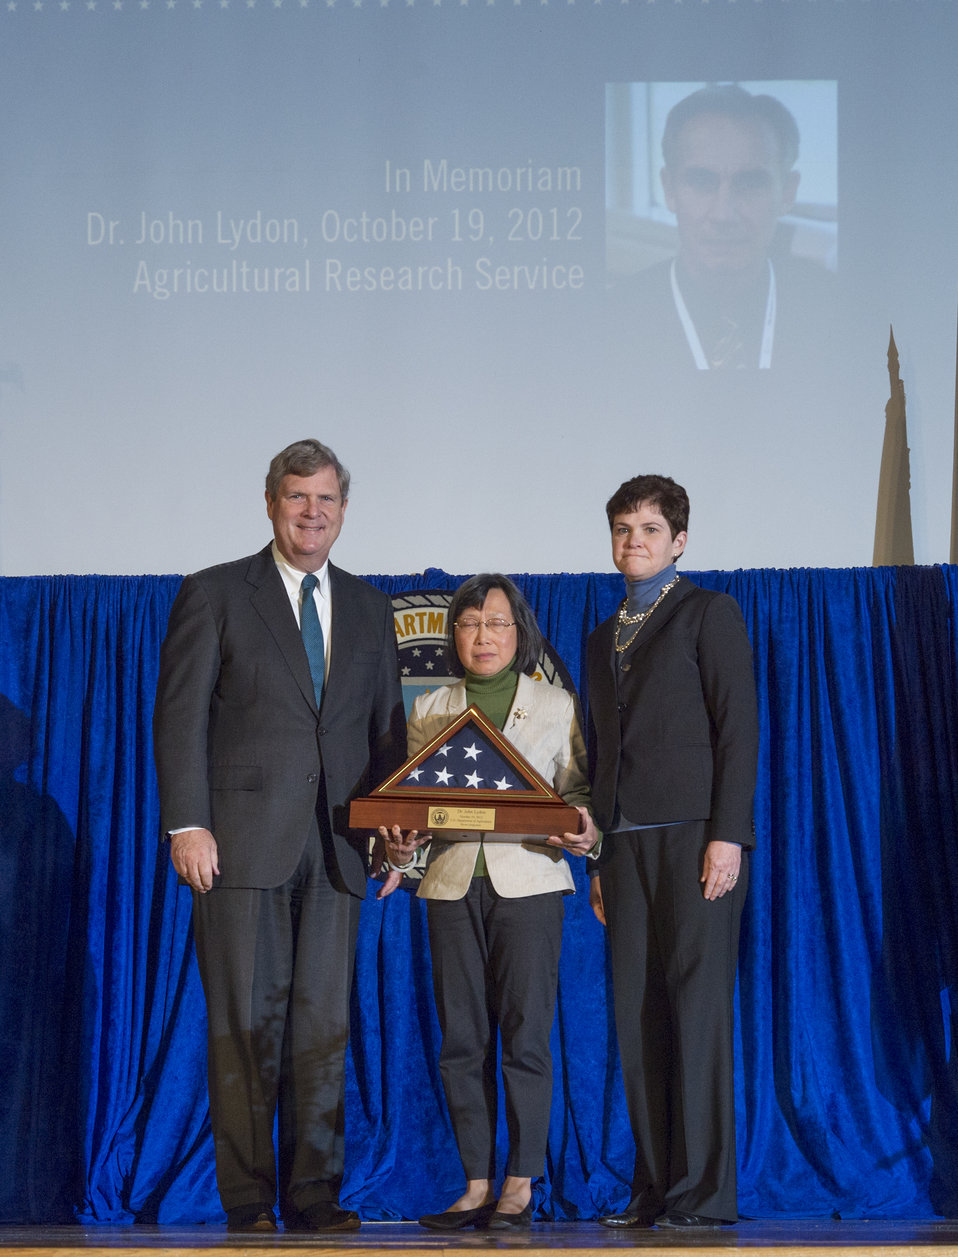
Agriculture Secretary Tom Vilsack and Agriculture Deputy Secretary Krysta Harden present a flag in memory of Dr. John Lydon to his widow in honor of his service and sacrifice in the performance of his duty while supporting the U.S. Department of Agriculture’s (USDA) mission at the 2013 Secretary’s Honor Awards in the Jefferson Auditorium at the U.S. Department of Agriculture (USDA) in Washington, D.C. on Wednesday, Dec. 11, 2013. On Tuesday, Oct. 2, 2012, Dr. John Lydon of the Agricultural Research Service (ARS) was injured in a car crash while traveling to meet with Parlier, CA scientists as part of his leadership and coordination of the ARS Weed Science National Program. Dr. Lydon passed away as a result of his injuries on Oct. 19, 2012.